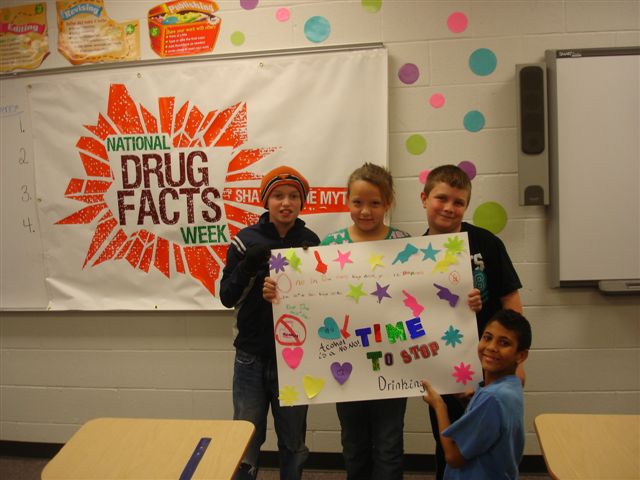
Gans School District

A science class from Gans School District presents one of its drug facts posters about alcohol and drug abuse. Each class from 5th-8th grade was given the opportunity to design and create posters to be displayed in their School's hallways to draw attention to the real facts about drugs and alcohol.